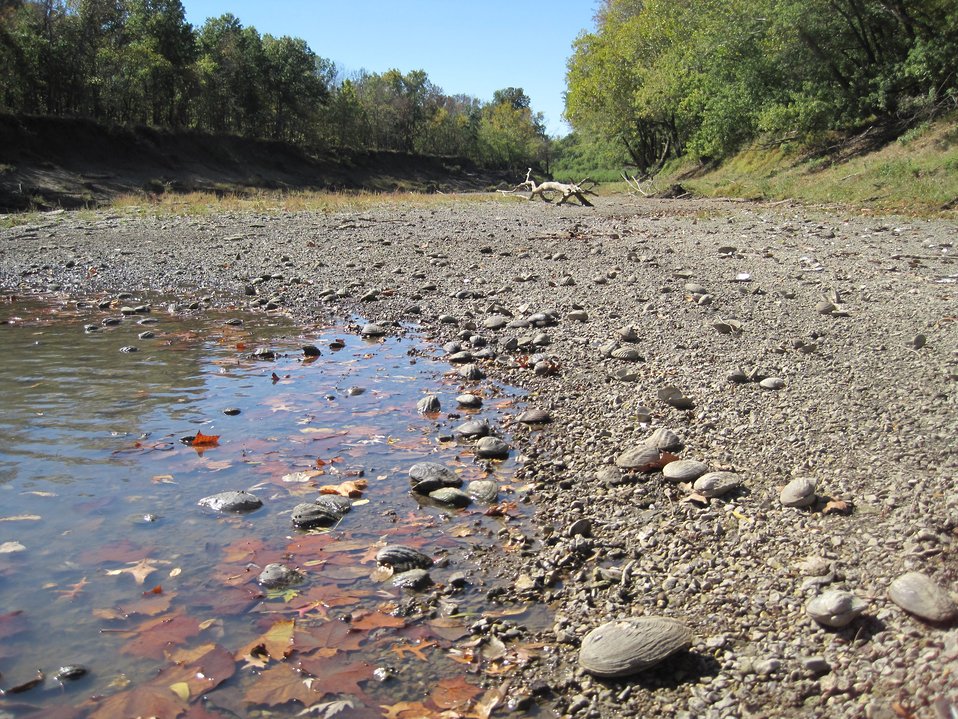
Mussel stranding, Marais de Cygnes Refuge

At Marais de Cygnes National Wildlife Refuge in Kansas, mussel strandings in fall 2012 occurred following drawdowns of the already drought-lowered Marais de Cygnes River.